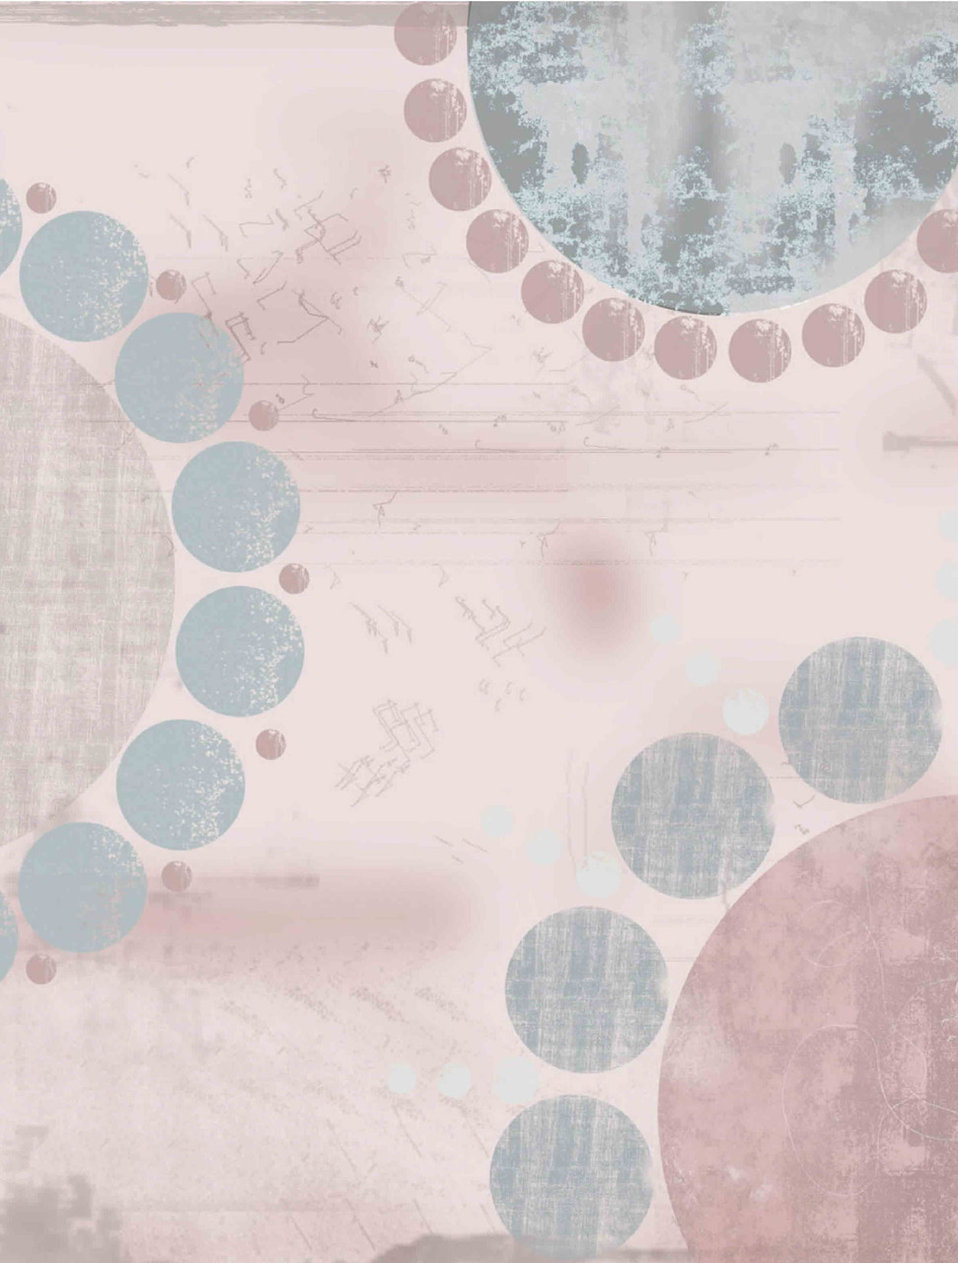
Grungy pink circles

A background with a grunge pink and gray circles.